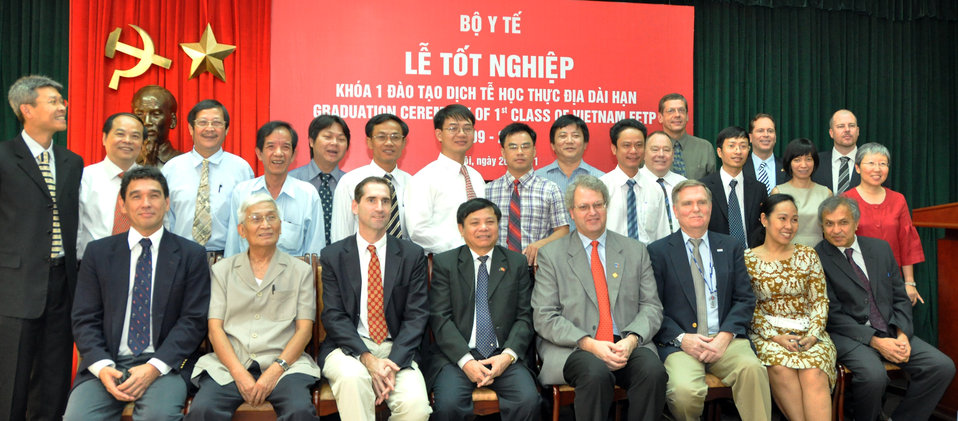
Field Epidemiology Training Program Graduation

The first five fellows graduated today from Vietnam's Field Epidemiology Training Program, a U.S.-supported initiative that provides public health workers with skills to rapidly identify, investigate, and respond to disease outbreaks.

The Field Epidemiology Training Program (FETP) was established by Vietnam's Ministry of Health in 2008 with funding and technical support from the U.S. Agency for International Development (USAID), the U.S. Centers for Disease Control and Prevention, the Joint U.N. Program, and the World Health Organization.